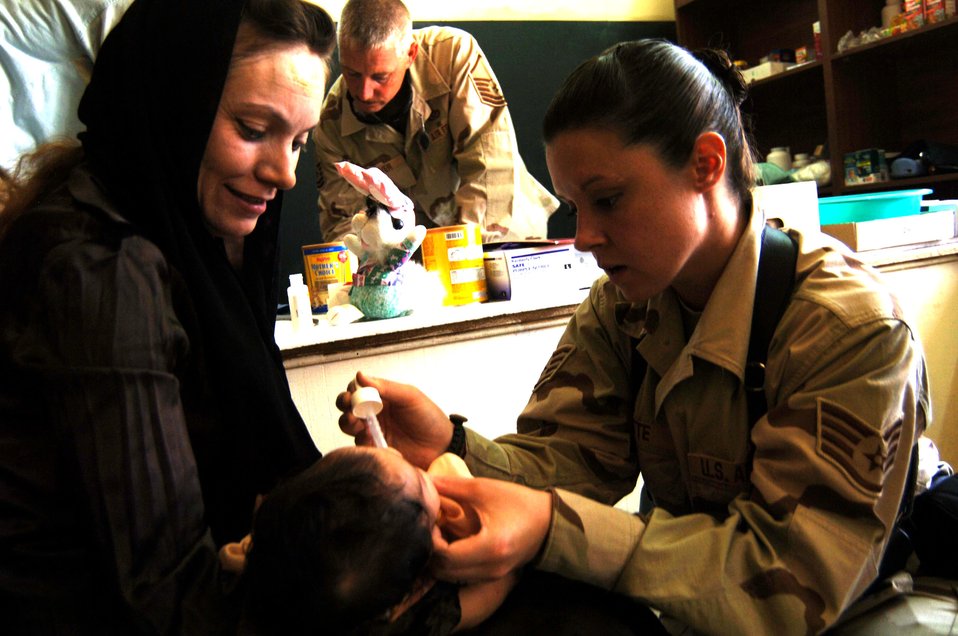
Medics lend a helping hand

Staff Sgt. Kelly Jette (right) applies medication to the nose of an Iraqi infant June 21 at the Civil-Military Operations Center medical clinic at Camp Striker, Iraq. Sergeant Jette is assigned to the 447th Expeditionary Medical Squadron. The Civil-Military Operations Center medical clinic provides free medical service to impoverished Iraqi citizens.